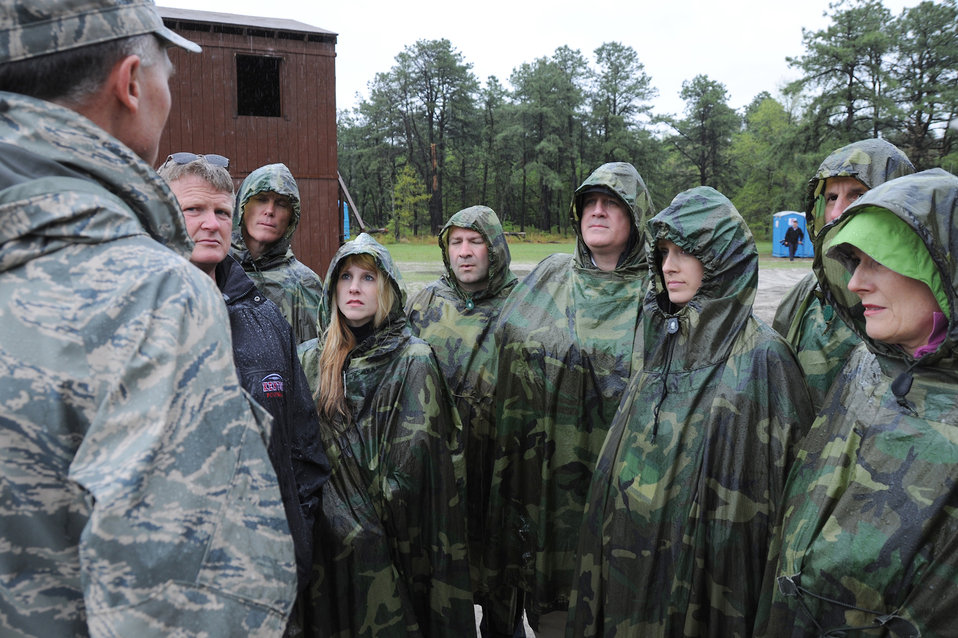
Civic outreach

Brig. Gen. William J. Bender explains expeditionary combat support training to participants in the Defense Department's Joint Civilian Orientation Conference May 4, 2011, at the U.S. Air Force Expeditionary Center at Joint Base McGuire-Dix-Lakehurst, N.J. Approximately 50 civilians, representing various professional and political fields, are participating in the weeklong DOD-sponsored program to learn about the U.S. military and its capabilities. General Bender is the Expeditionary Center commander.